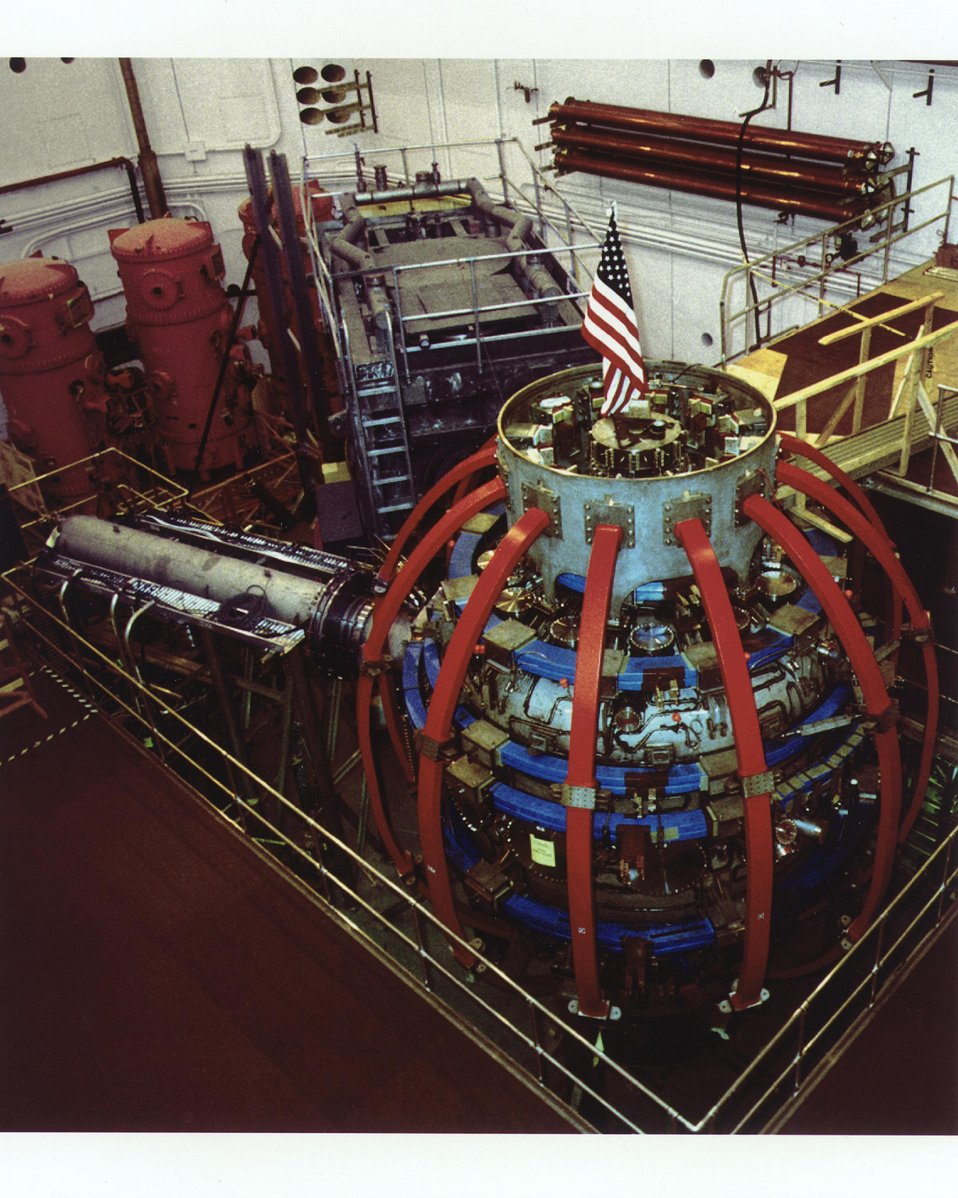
SETTING OF PPPL'S NATIONAL SPHERICAL TORUS EXPERIMENT (NSTX).

NSTX, A MAGNETIC FUSION DEVICE CONSTRUCTED BY PPPL IN COLLABORATION WITH OAK RIDGE NATIONAL LAB, COLUMBIA UNIV. AND THE UNIVERSITY OF WA , OBTAINED FIRST PLASMA FEB. 12, 1999. NSTX WILL BE USED TO STUDY PHYSICS PRINCIPLES OF SPHERICALLY SHAPED PLASMAS-HOT IONIZED GASES IN WHICH NUCLEAR FUSION WILL OCCUR UNDER THE RIGHT CONDITIONS OF TEMPERATURE, DENSITY AND CONFINEMENT IN A MAGNETIC FIELD. SCIENTISTS FEEL THAT FUSION, THE ENERGY SOURCE OF THE SUN AND ALL STARS, CAN PROVIDE AN INEXHAUSTIBEL, SAFE, AND ENVIRONMENTALLY SOUND SOURCE OF ENERGY.